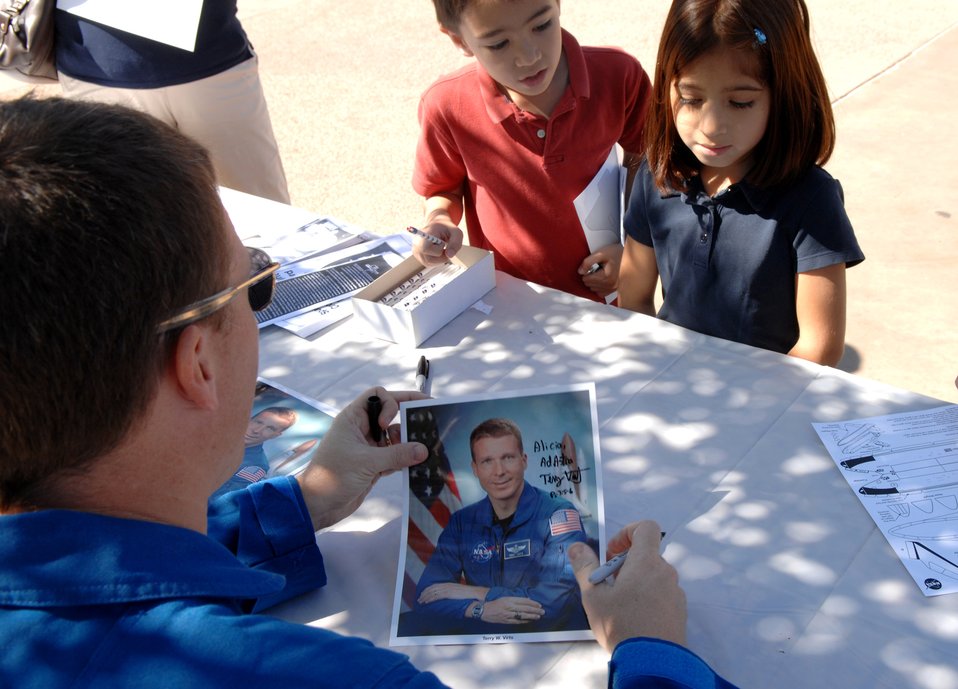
Air Force Week displays highlight airpower

NASA Astronaut Lt. Col. Terry Virts autographs a photo March 20 during Air Force Week at the Arizona Science Center in downtown Phoenix. Colonel Virts answered questions about his role as an astronaut and Air Force member.